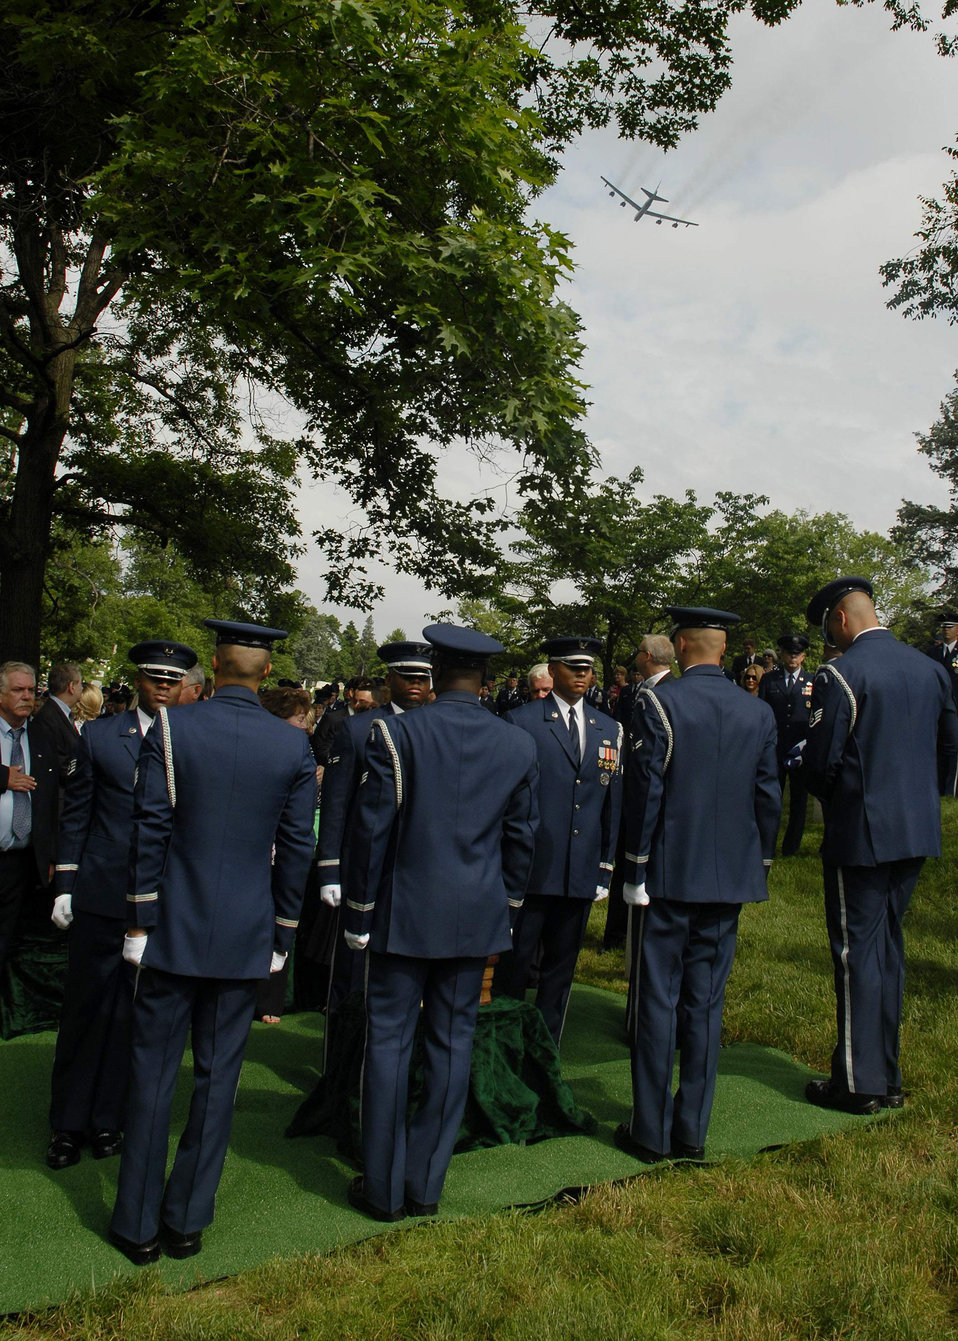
Chief Airey laid to rest at Arlington Cemetery

U.S. Air Force Honor Guard members position the remains of Chief Master Sergeant Paul W. Airey, while a B-52 Stratofortress from Barksdale Air Force Base, La., performs a flyover manuever, during the memorial service at Arlington National Cemetery, Va., May 28. Chief Airey, serving 27 years, became the first Chief Master Sergeant of the Air Force April 3, 1967, following his installment by then Secretary of the Air Force Harold Brown and Air Force Chief of Staff Gen. John P. McConnell. Chief Airey retired from active duty on Aug. 1, 1970 and died March 11 in Panama City, Fla. Chief Airey and his wife Shirley's remains are buried together at Arlington National Cemetery.